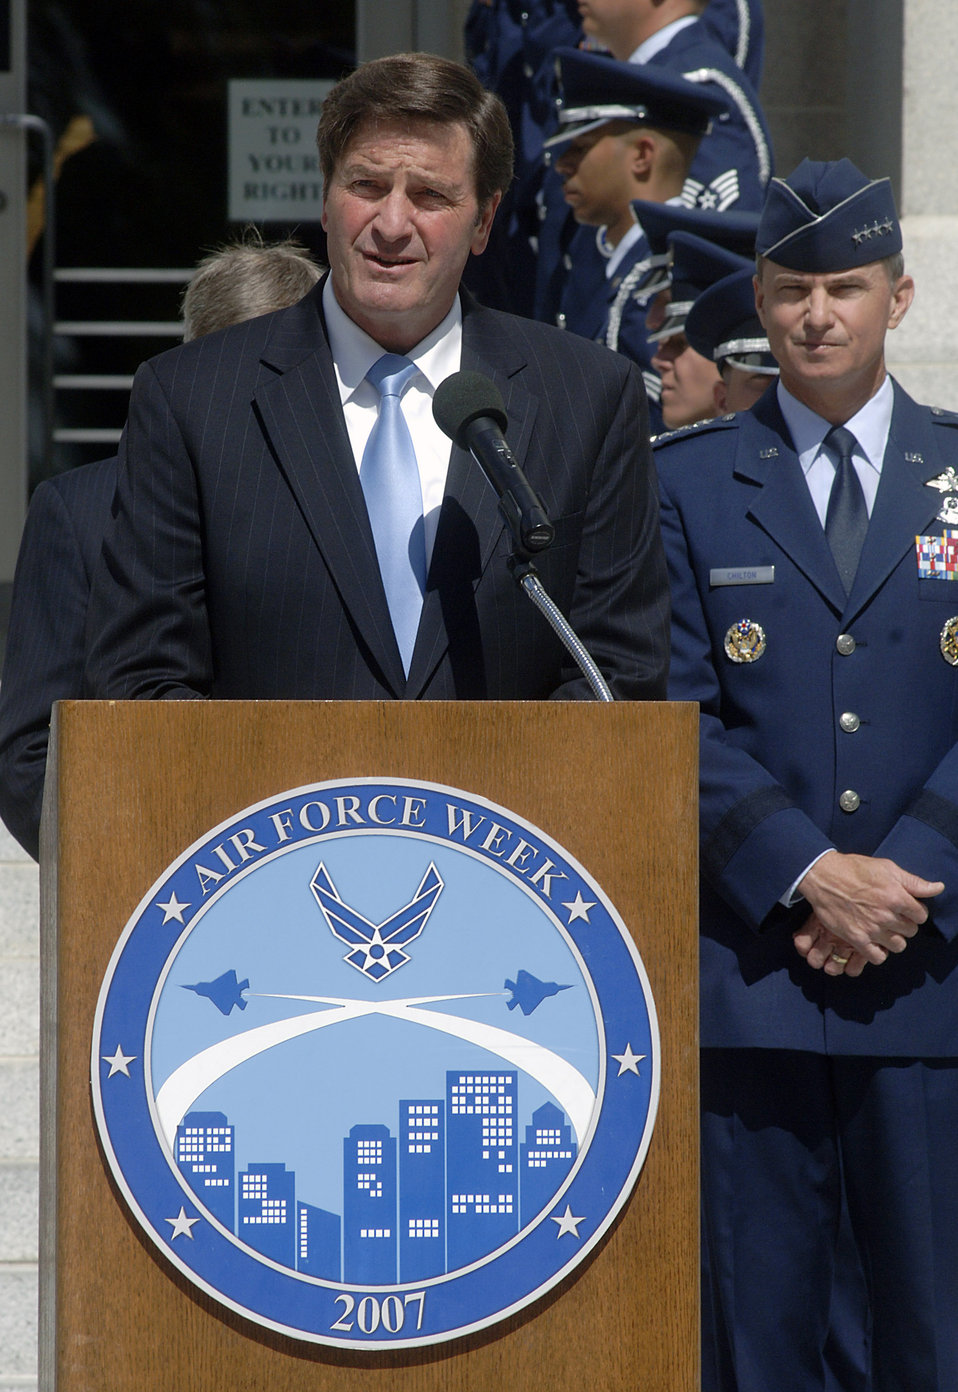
Air Force Week begins in Sacramento

California Lt. Gov. John Garamendi addresses the crowd during the Air Force Week California Proclamation Ceremony June 4 at Sacramento, Calif. The purpose of Air Force Week is to inform and educate the American public about the importance and roles of the Air Force in America's national defense.